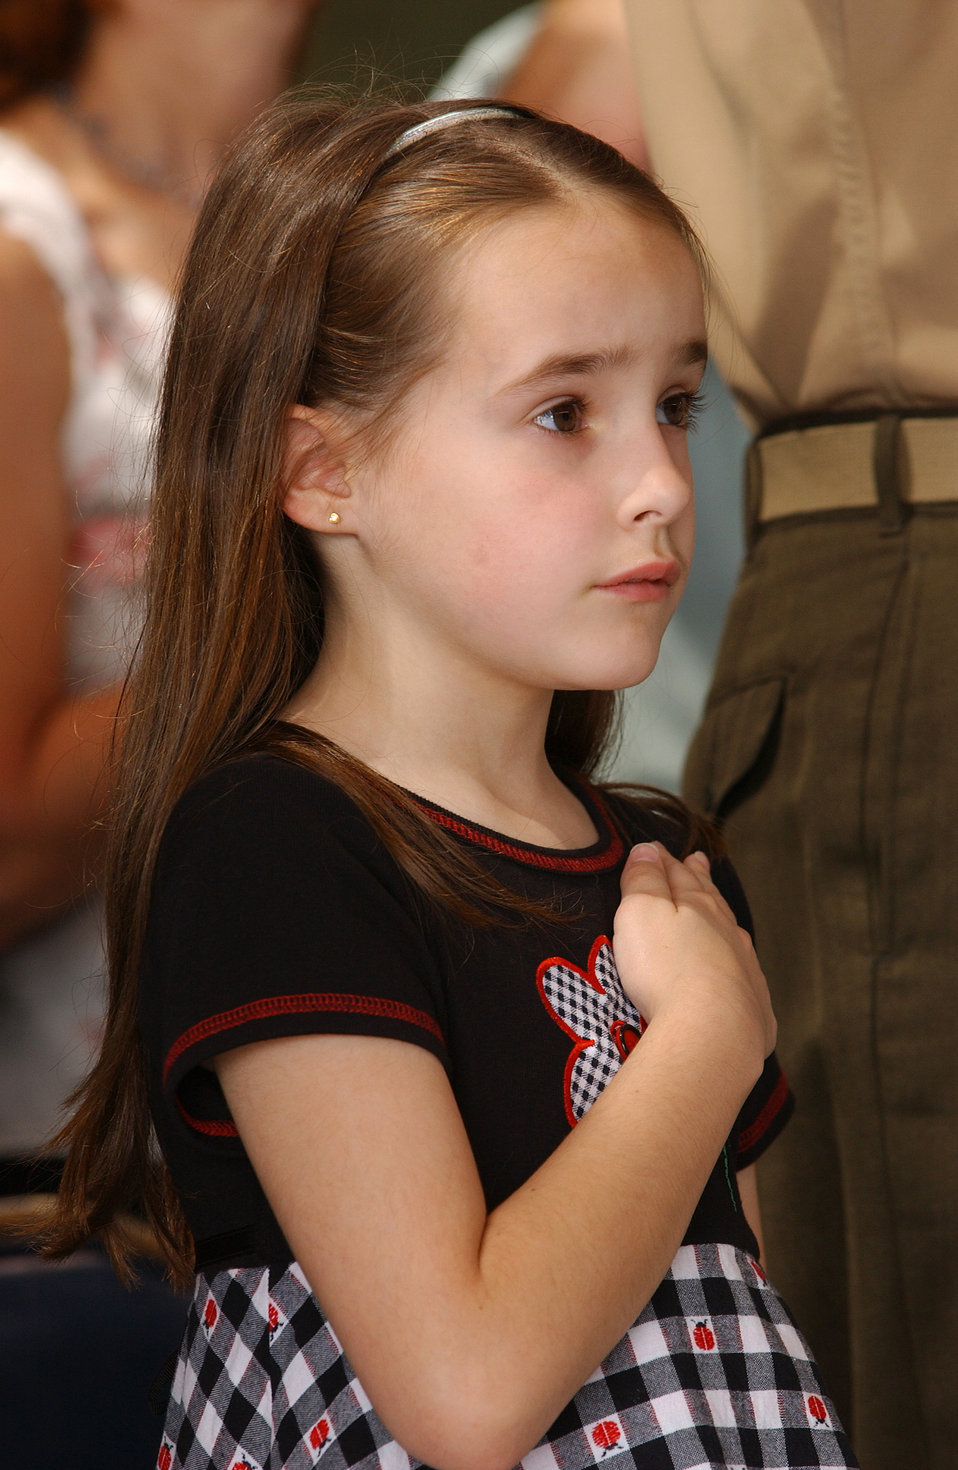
Young Glory

YOKOTA AIR BASE, Japan -- Ashley Goodwin, daughter of the new wing commander, Col. Scott Goodwin renders honors for the Japanese and U.S. national anthems during the 374th Airlift Wing change of command ceremony here recently.